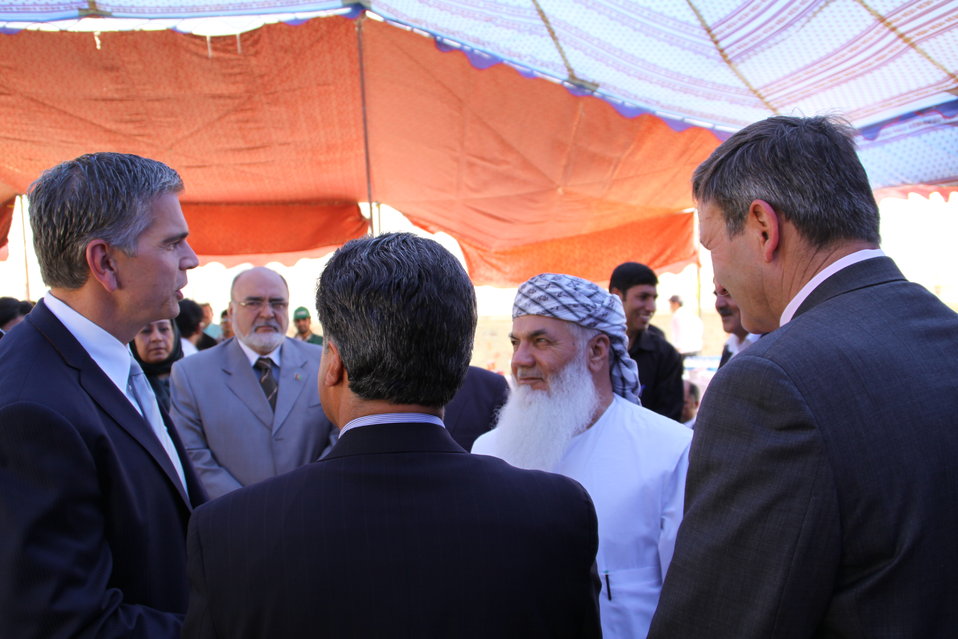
105 MW Tarakhil Power Plant Handover